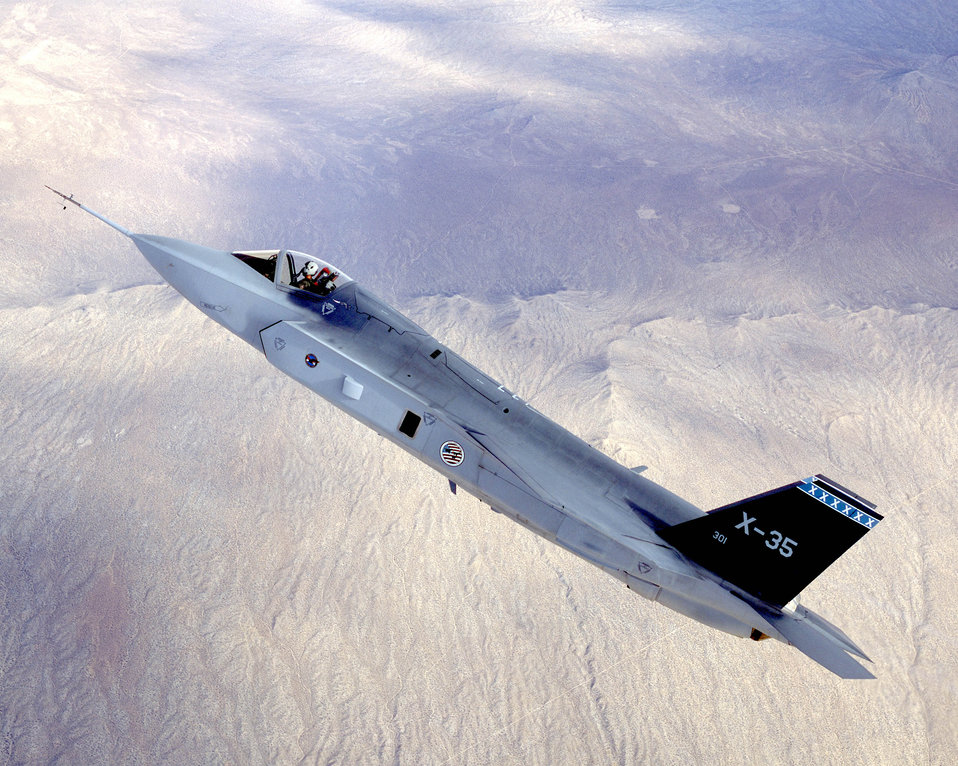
Flight test

Lt. Col. Paul Smith of the Air Force and X-35 Chief Test Pilot Tom Morgenfeld each flew the X-35C. Both had flown the similar X-35A extensively during that plane's fight-test program.